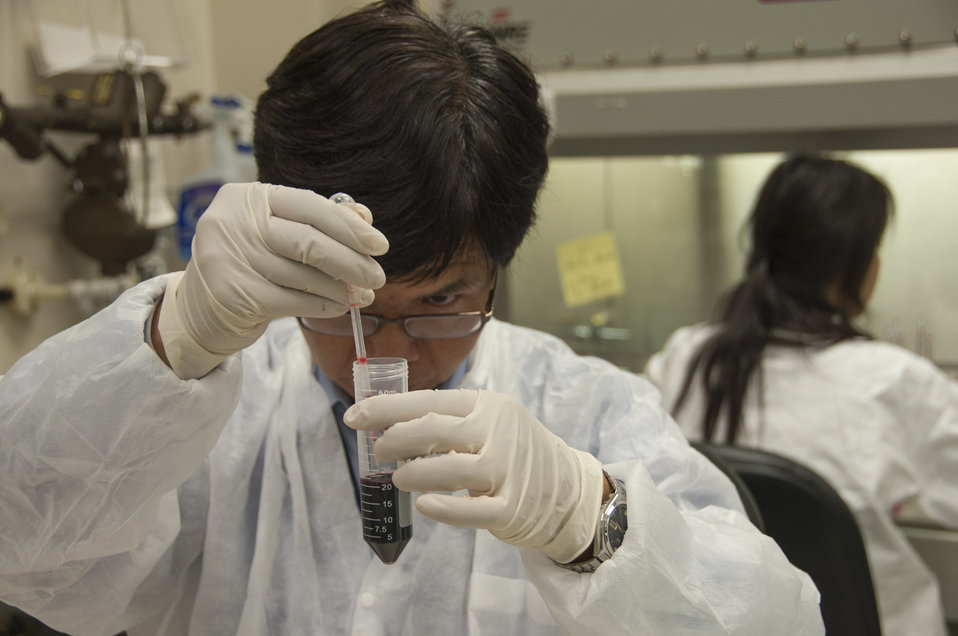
Blood Research: Saving Lives (8525)

Jason Liu, Ph.D., a laboratory chief at FDA’s Office of Blood Research and Review, collects white blood cells from processed whole blood. FDA is responsible for the safety of our nation’s blood supply and is at the forefront of evaluating and encouraging innovative technologies for protecting it.

Read this Consumer Update to learn more: Advances in Saving Lives with Blood